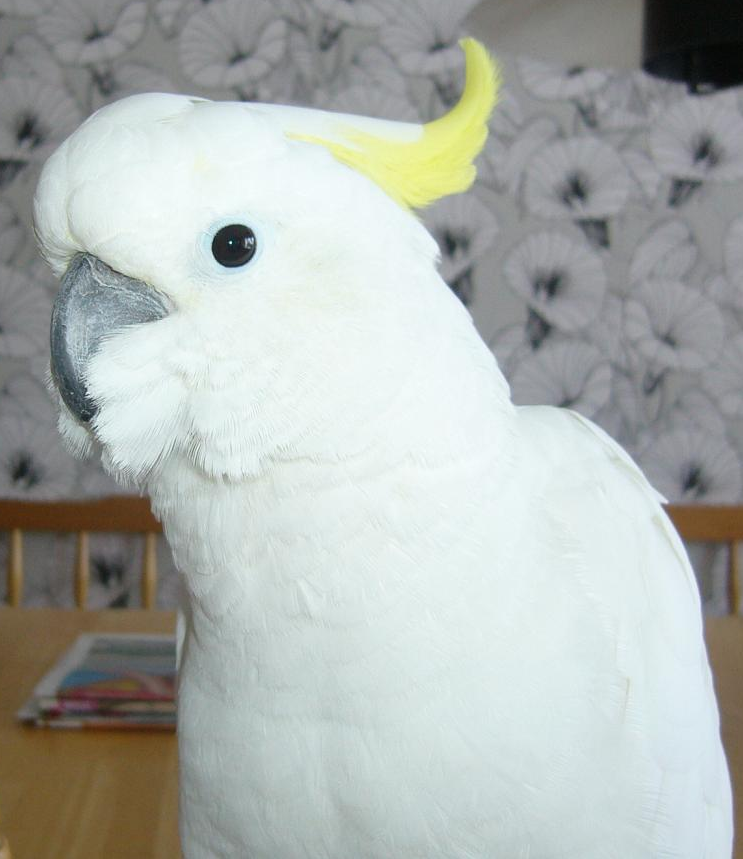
An Eleonora cockatoo (Cacatua galerita eleonora. It has a rounded pale-yellow crest, white cheeks, and very pale-blue eye-rings.